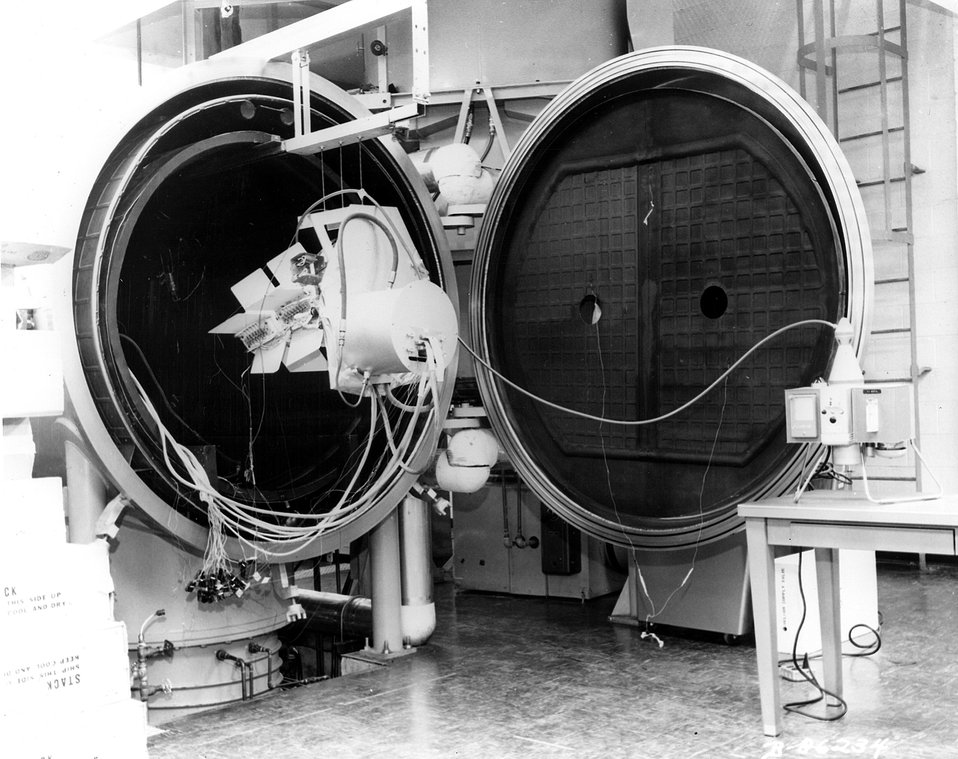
Space Atomic Batteries Under Test... Two finned atomic batteries in tandem in thermal vacuum chamber. The chamber simulates outer space environmental conditions which batteries of this type (isotopic generators) will experience when they are launched in early 1968.